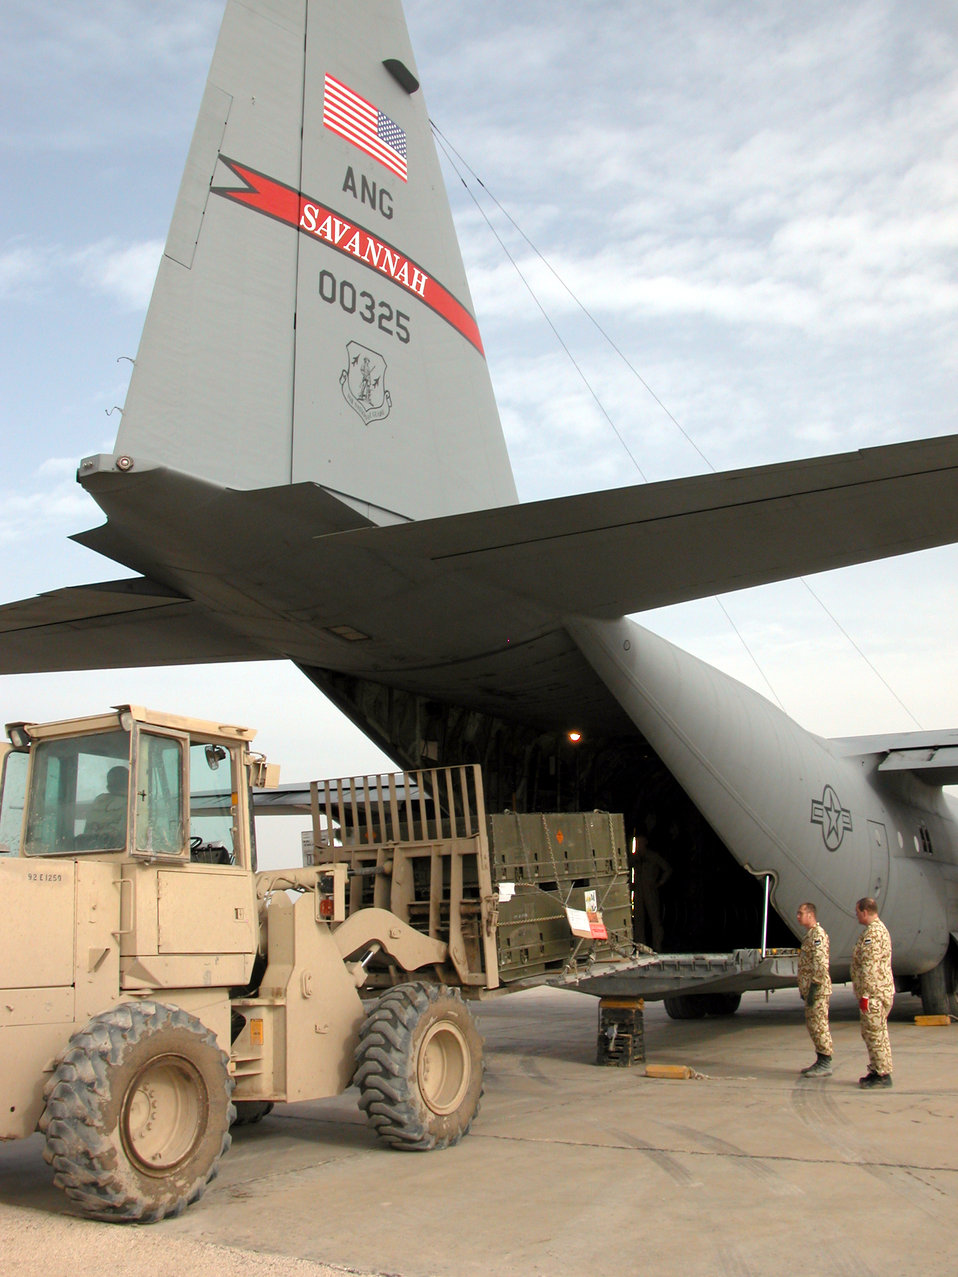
A days work

TALLIL AIR BASE, Iraq -- Air transportation workers load cargo into a Georgia Air National Guard C-130 Hercules temporarily assigned to the 332nd Air Expeditionary Wing here. U.S. Air Force and Estonian cargo movement specialists work together to move cargo and passengers through here.